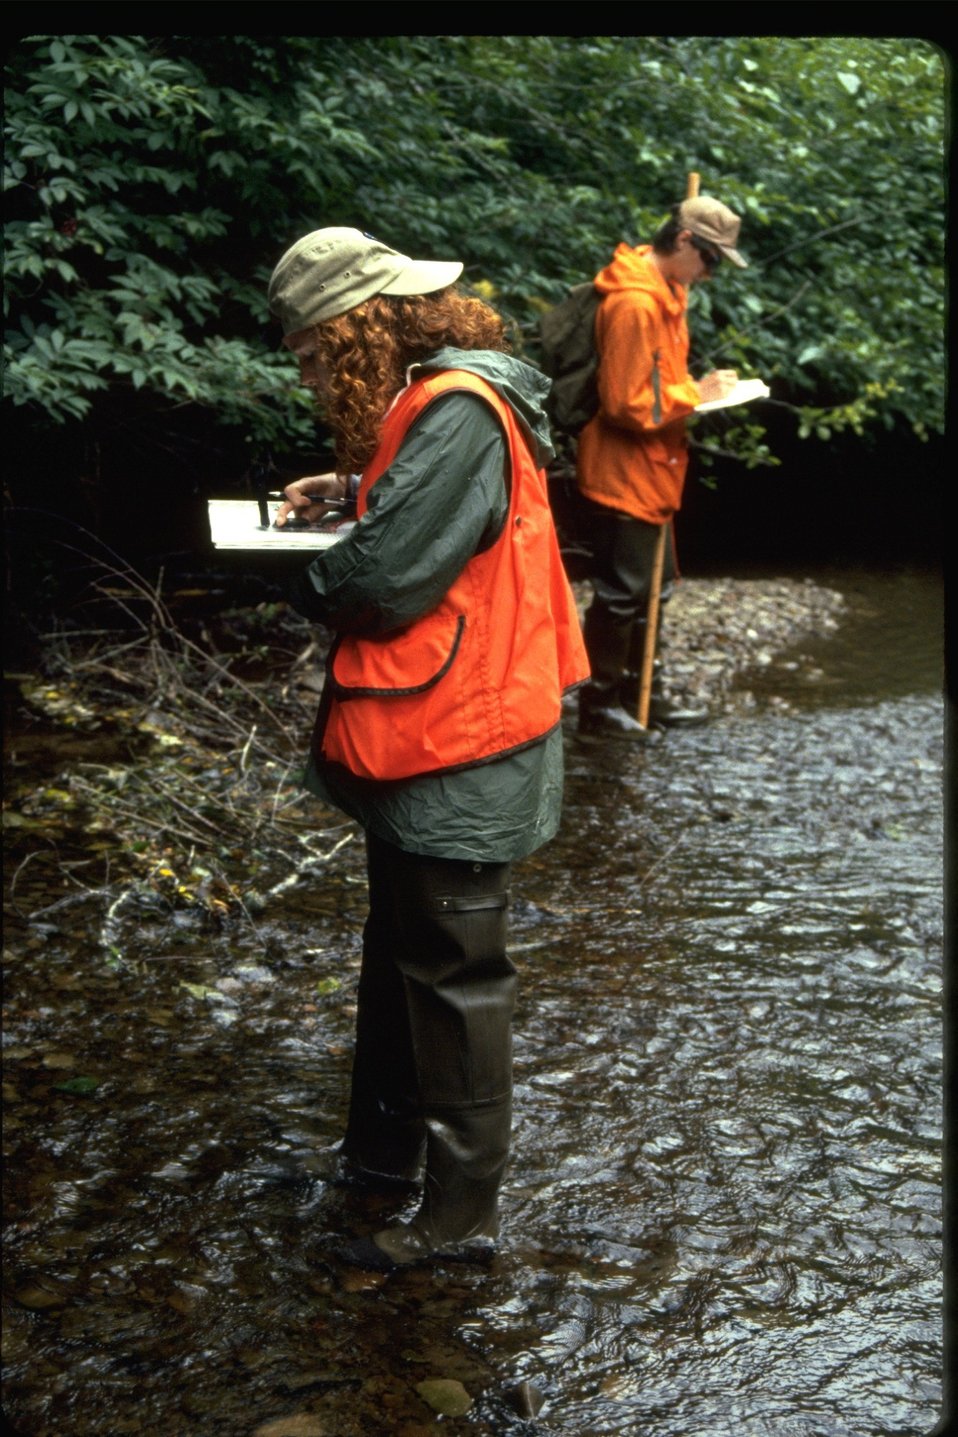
Sarah and Russ surveying Smith Creek during habitat study.